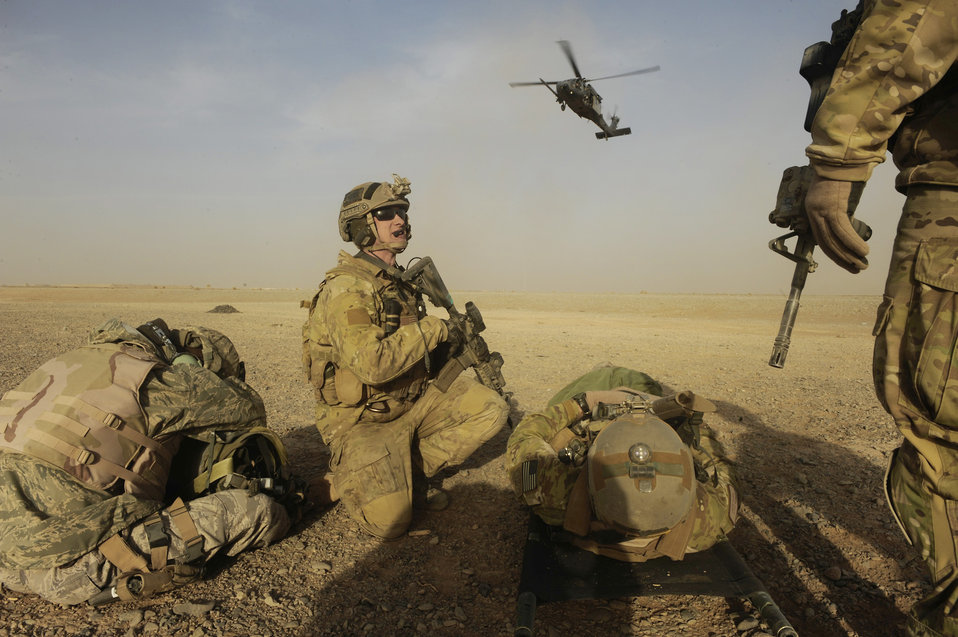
Kandahar Airmen practice evacuation skills

Capt. Nick Morgans prepares to load 'casualties' with other Airmen as an HH-60 Pave Hawk lands during a mass casualty scenario Dec. 24, 2010, near Kandahar, Afghanistan. Sergeant Wood and Captain Morgans are assigned to the 46th Expeditionary Rescue Squadron.